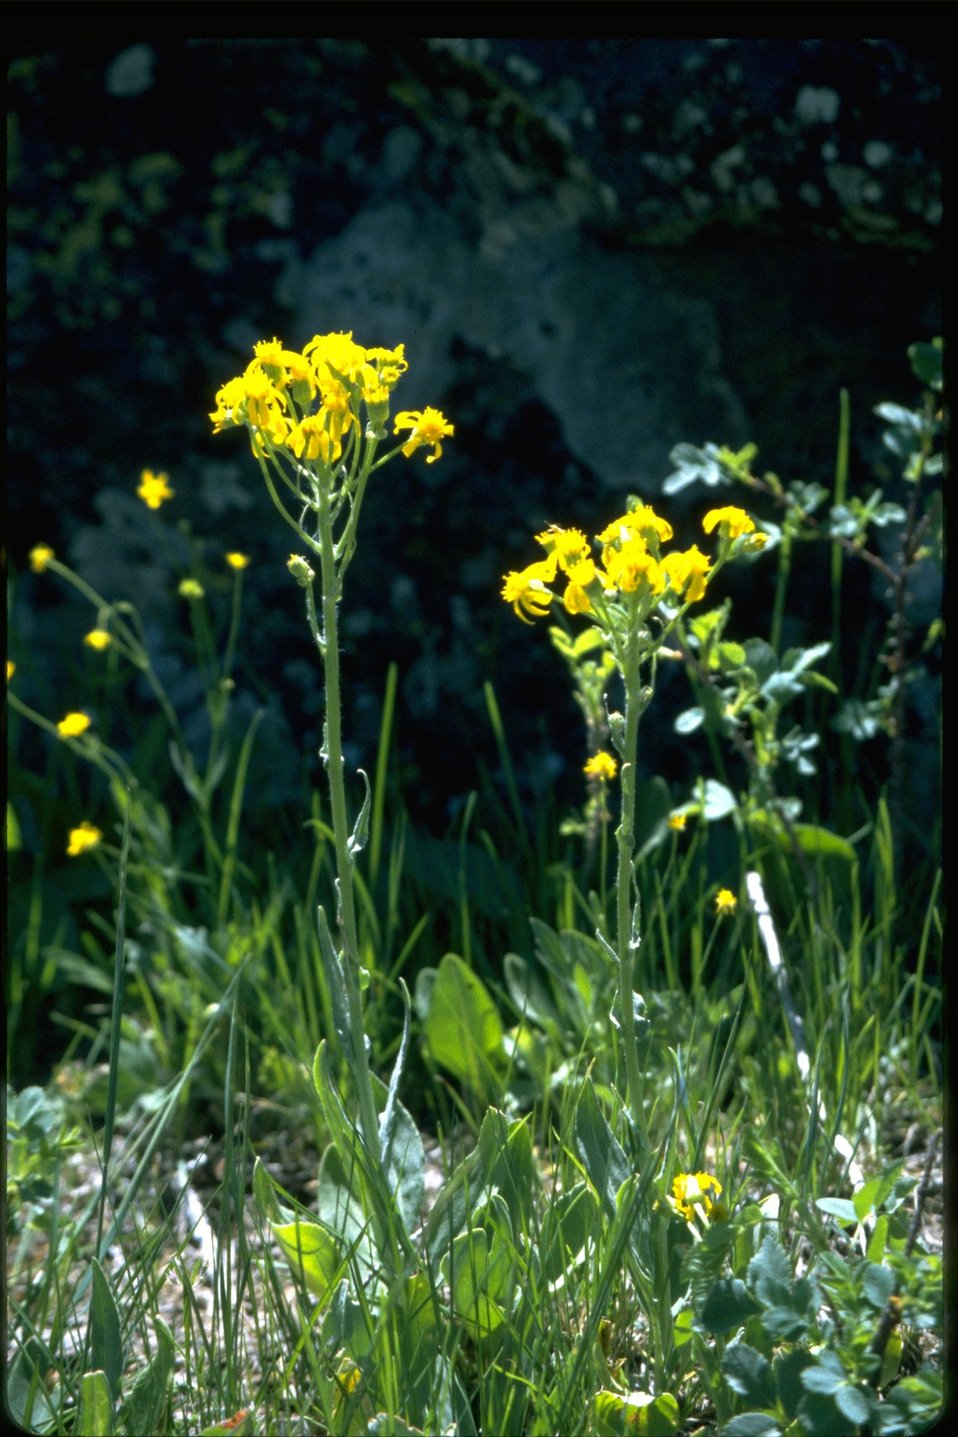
Medium shot of yellow wildflowers.